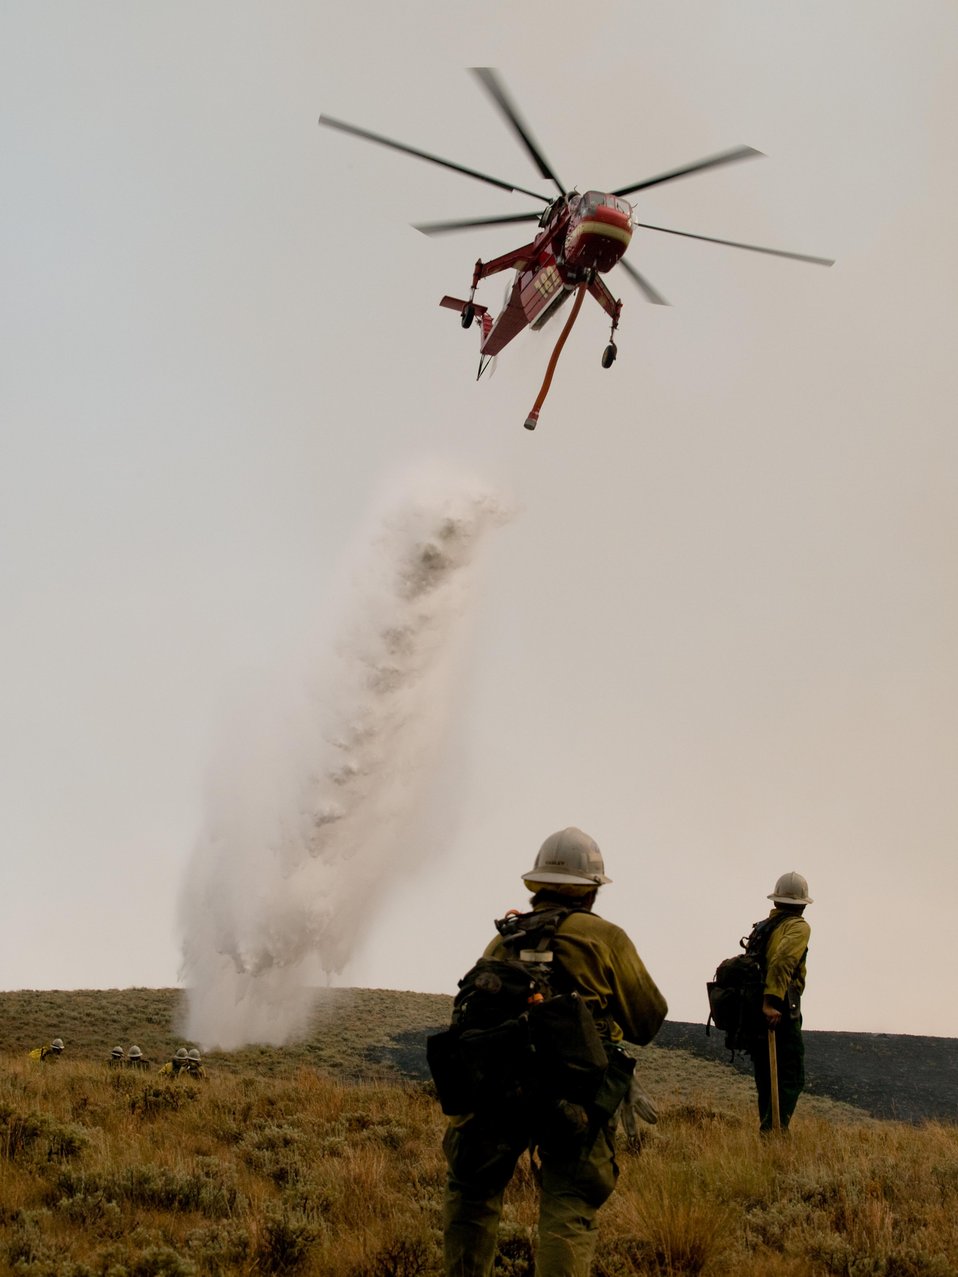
Helicopter makes water drop to aid firefighters working on the Lodgepole Fire. The Lodgepole Fire in the Salmon-Challis National Forest near Challis, ID began on Jul. 20, 2013 by lightning has consumed approximately 13,700 acres and is approximately 15% contained.